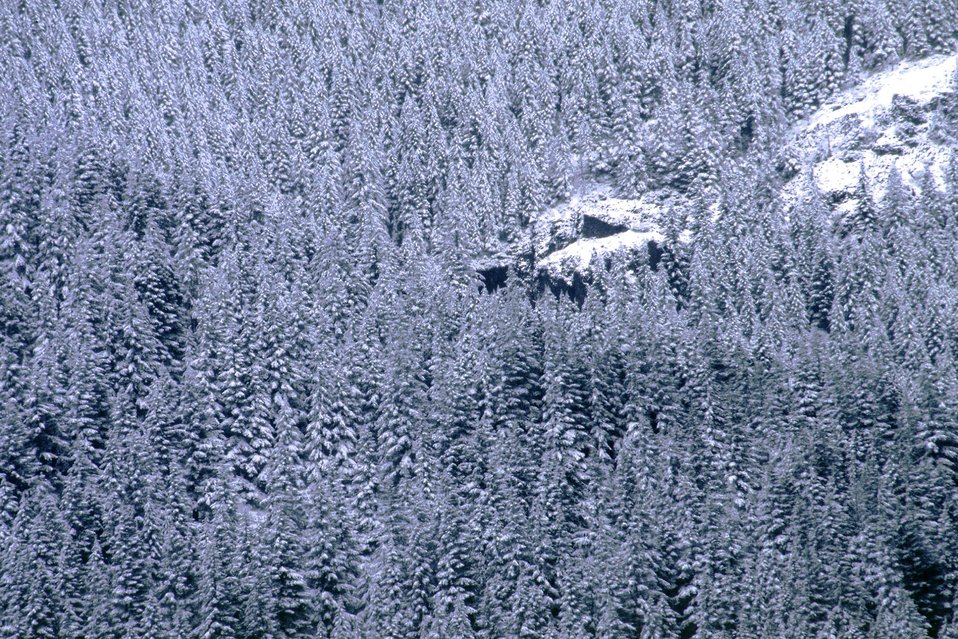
Mid Winter forest scene in the Mollala Corridor.